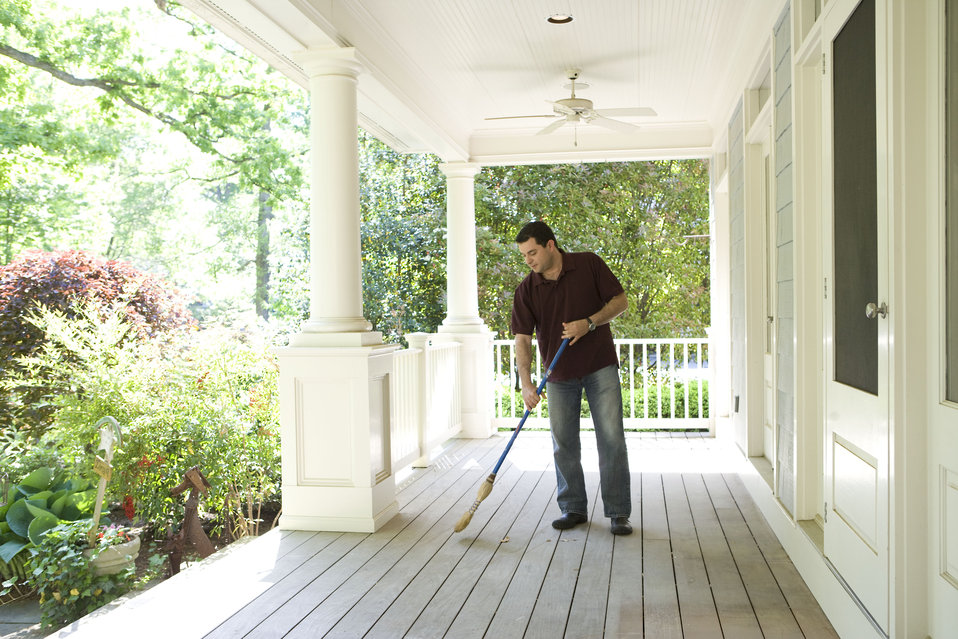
Home maintenance includes both the indoor, and as was the case here, outdoor environment, and is an ongoing process with which a homeowner need to keep up in order to provide for a healthy living space. Keeping your porch dust-free reduces the amount of contaminants tracked into the house.This man was in the process of cleaning his home's porch using a broom, as well as a water hose. In this way, airborne particulates including dust and pollen, could be removed from this area of his home, reducing the detrimental effects upon his family's respiratory systems. These irritants can sometimes result in sinus infections, and asthma.